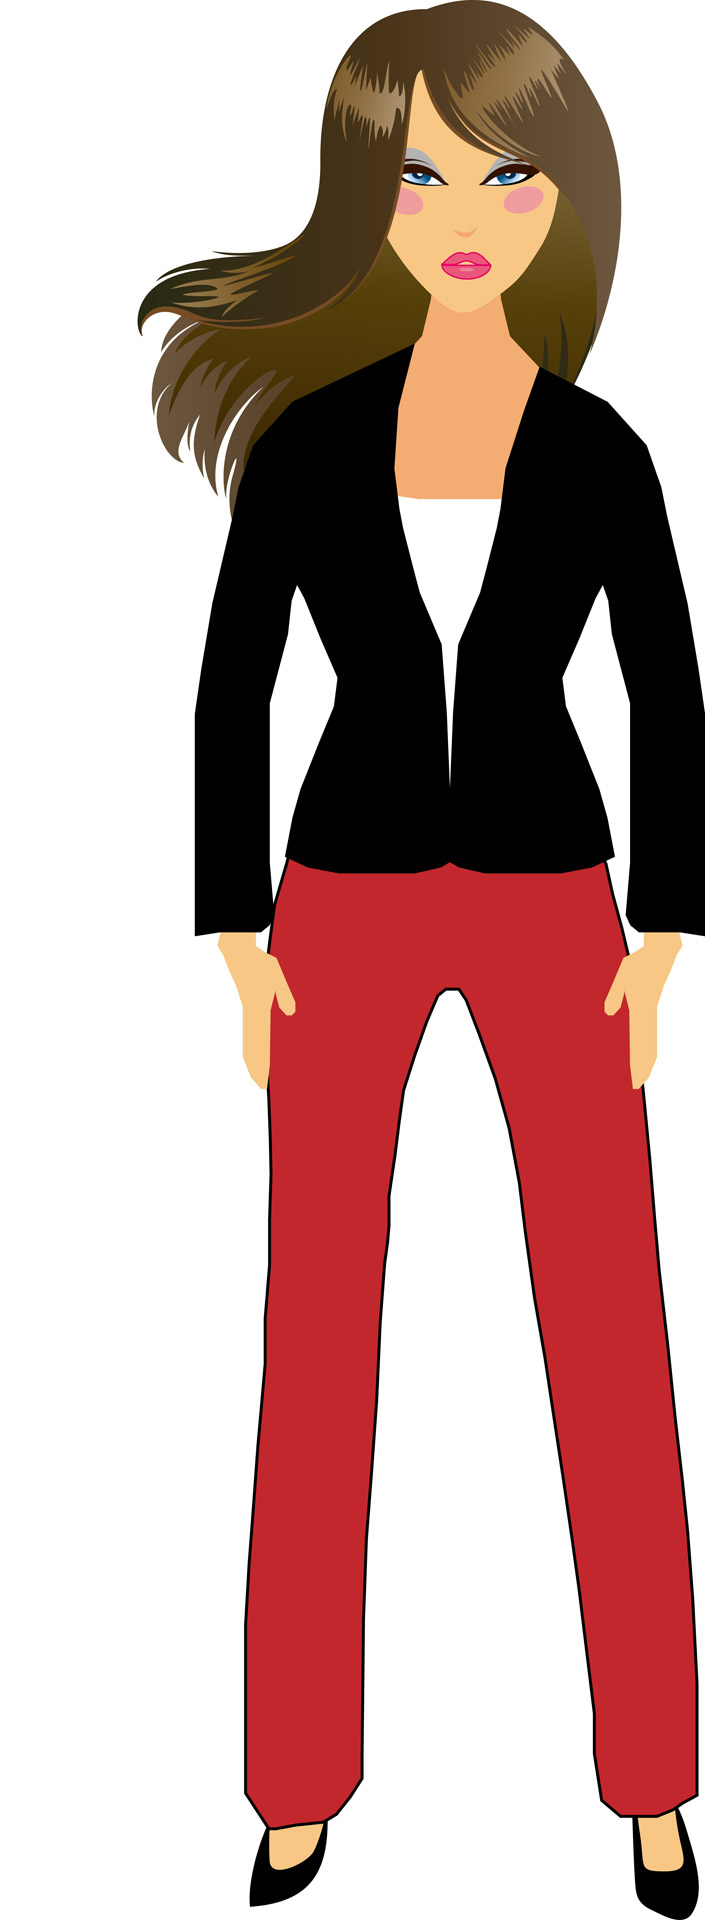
Girl clip-art

Girl with long hair clip-art illustration.